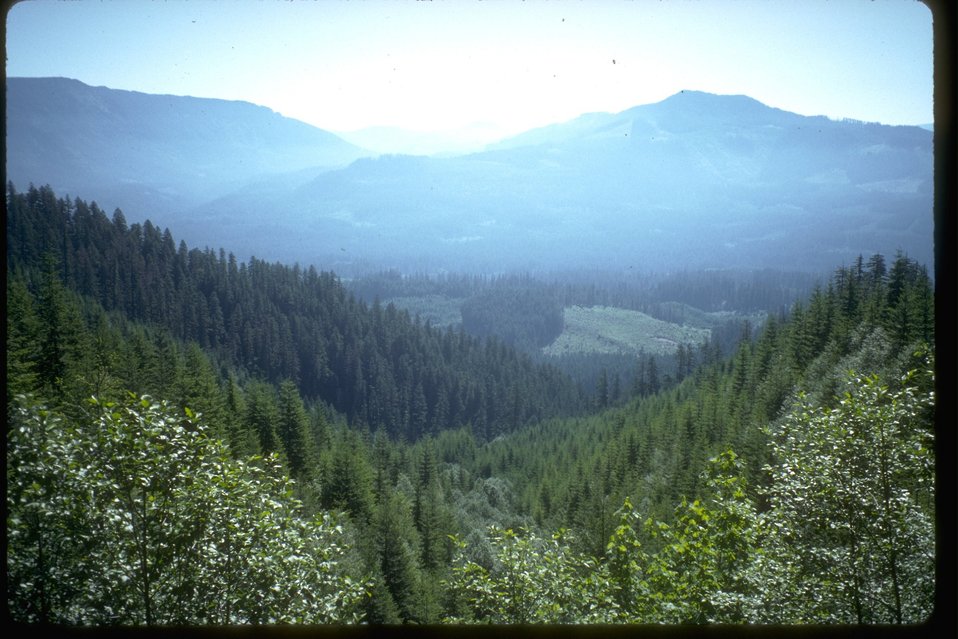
Watershed scene in Western Oregon.